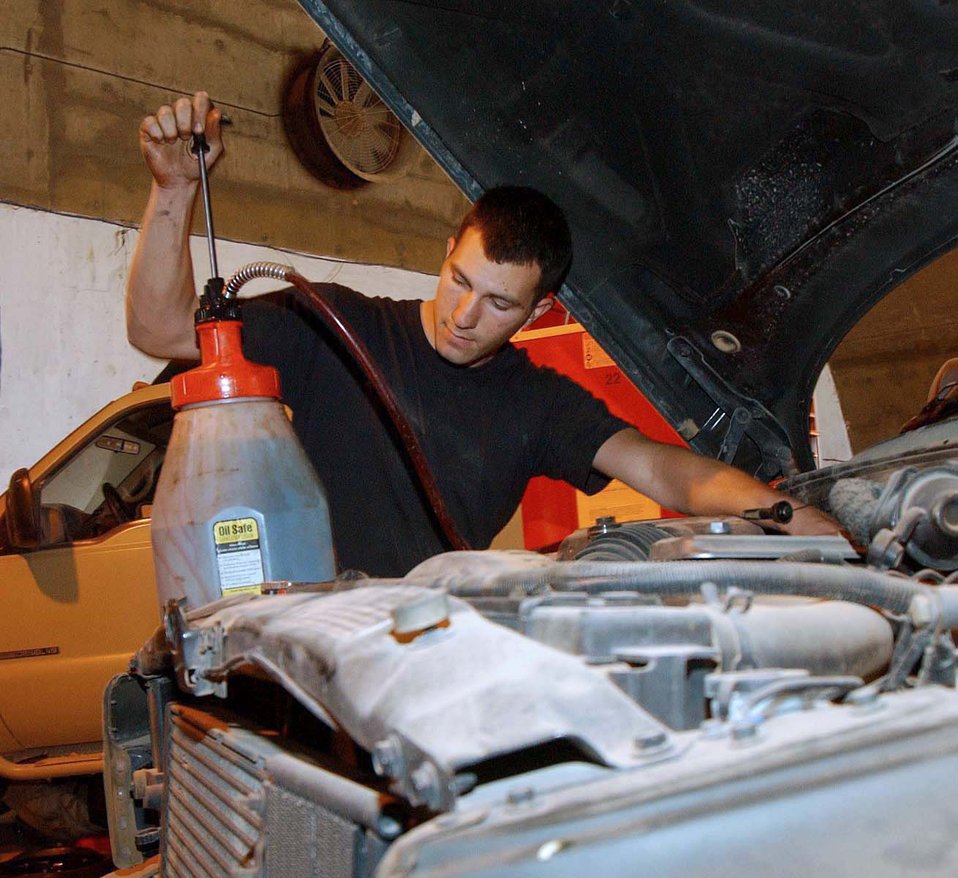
Vehicle maintainers keep Balad moving

BALAD AIR BASE, Iraq -- Senior Airman William Meredith tops off a flightline truck with transmission fluid. He is a mechanic with the 332nd Expeditionary Logistics Readiness Squadron here.